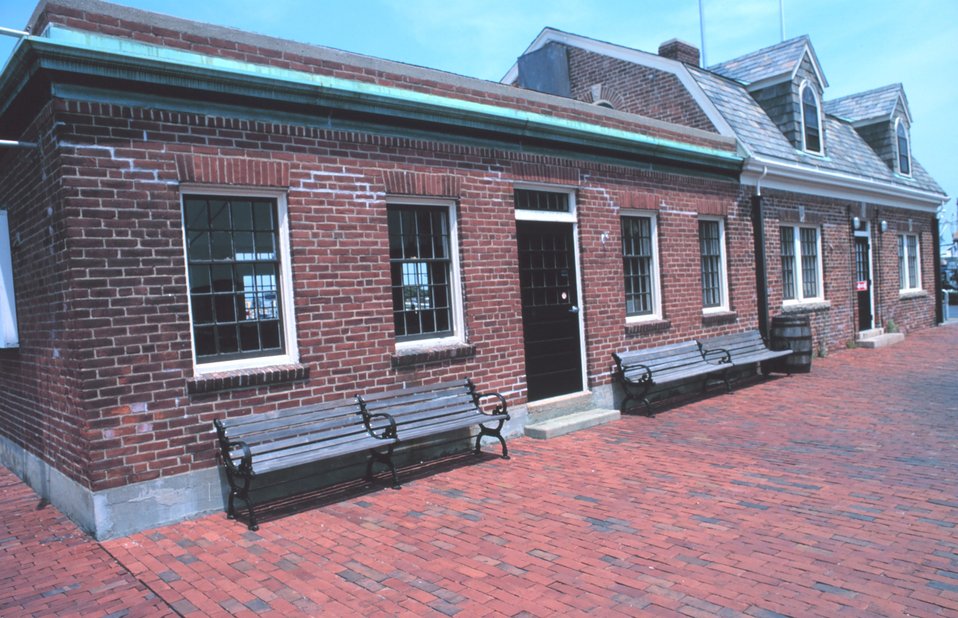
New Bedford Historic District building